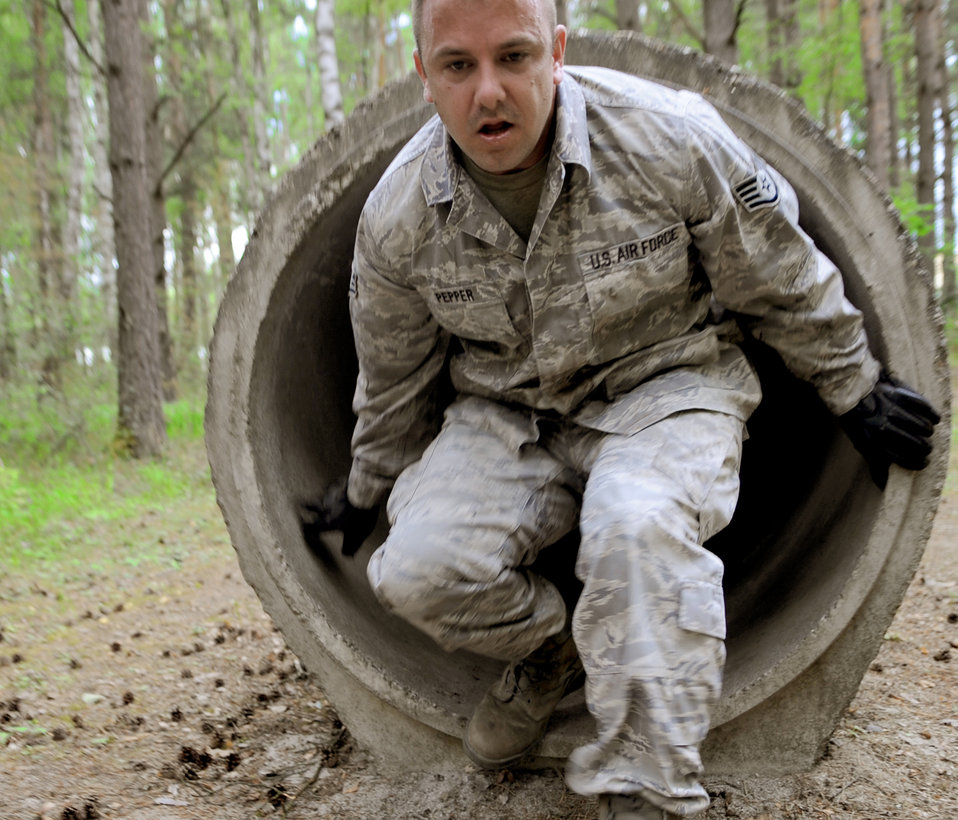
Exercise Allied Strike 10

Staff Sgt. Robert Pepper completes an obstacle July 23, 2010 during Exercise Allied Strike 10, at the U.S. Army's training area in Grafenwoehr, Germany. Allied Strike is Europe's premier close air support that helps build partnership capacity among NATO nations.